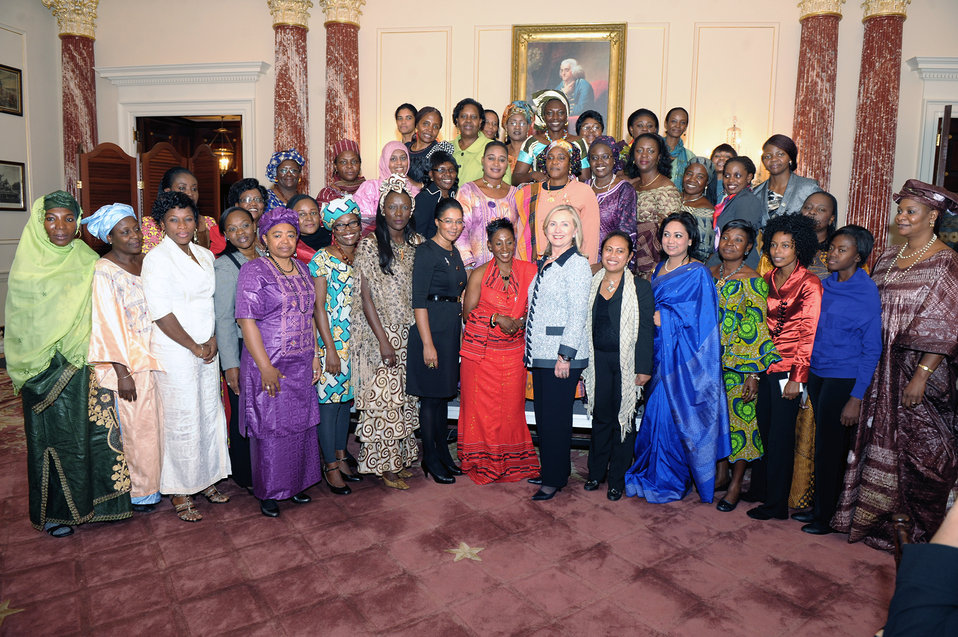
Secretary Clinton Meets With African Women Entrepreneurs

U.S. Secretary of State Hillary Rodham Clinton meets with 40 women entrepreneurs from 36 African nations participating in the 2011 African Women's Entrepreneurship Program at the U.S. Department of State in Washington, D.C., on October 3, 2011.